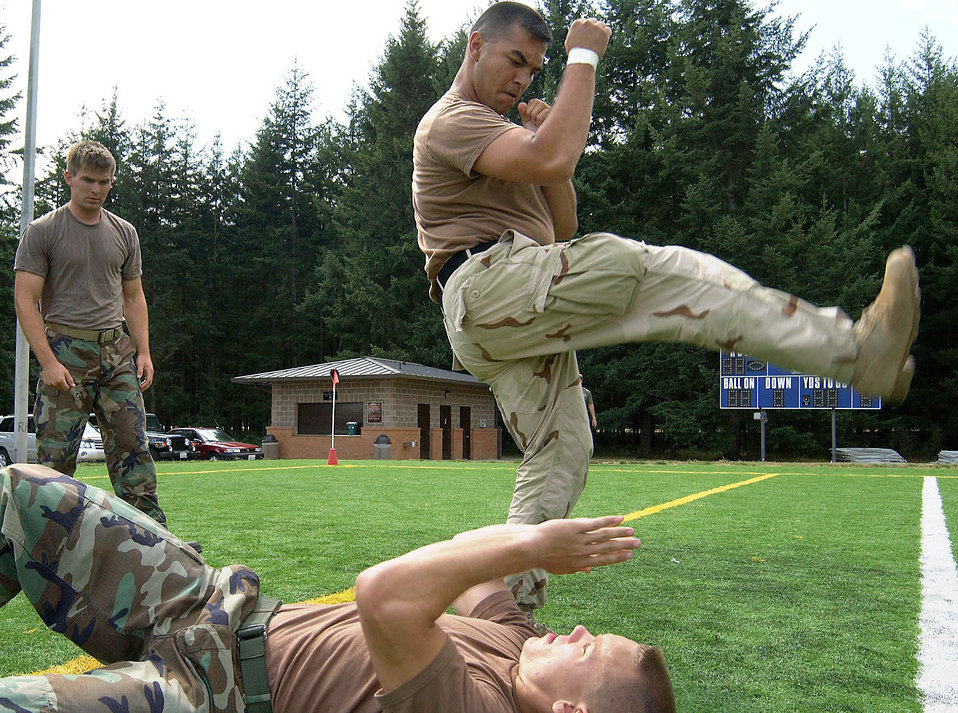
Taking down the enemy

MCCHORD AIR FORCE BASE, Wash. -- Senior Airman John Plemons defends himself against Staff Sgt. Nick Picoc as he performs a leg stomp. The Airmen are participating in hand-to-hand combat training here. Airman Plemons is assigned to the 62nd Security Forces Squadron and Sergeant Picoc is with the 5th Air Support Operations Squadron.